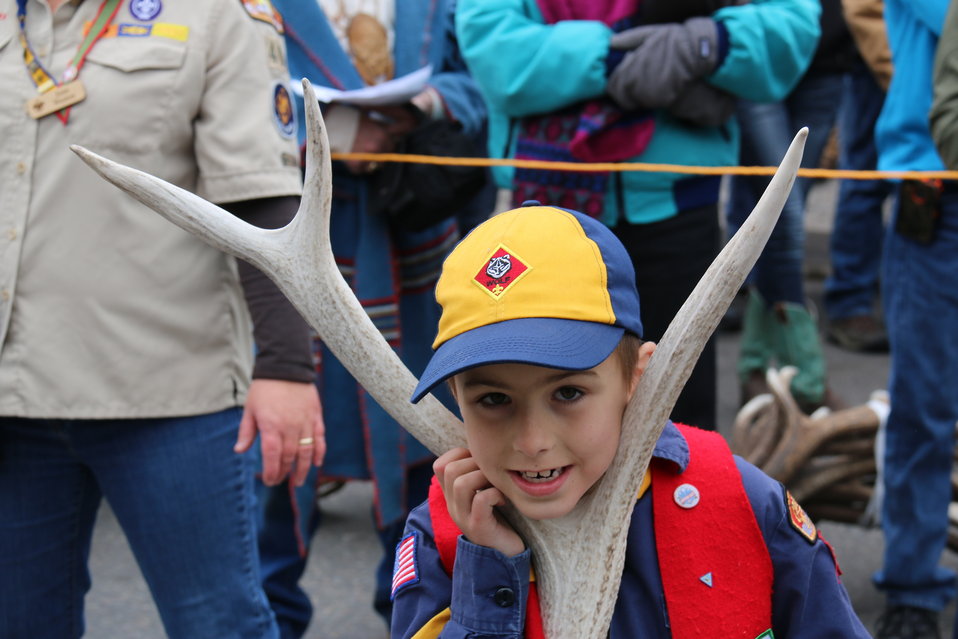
A Unique Frame

A Young Scout rests his head on the fork of an antler as he waits for his turn to take his auction lot up to the stage for bidding.